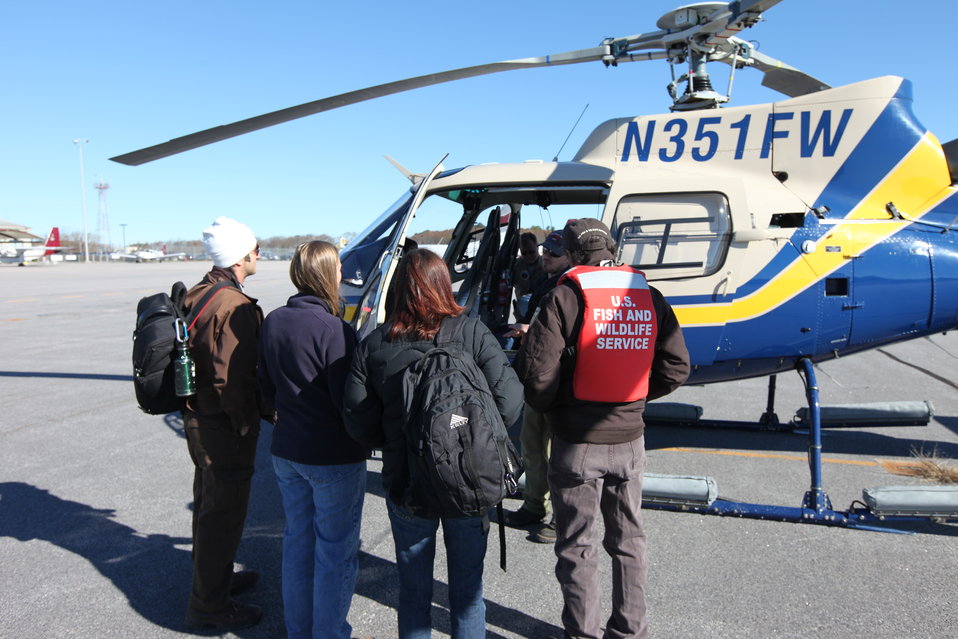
Rhode Island National Wildlife Refuge Complex staff prepare to board helicopter (RI)

Rhode Island National Wildlife Refuge staff get a safety briefing before taking flight in the U.S. Fish and Wildlife Service helicopter for an aerial survey of damage in the aftermath of Hurricane Sandy.